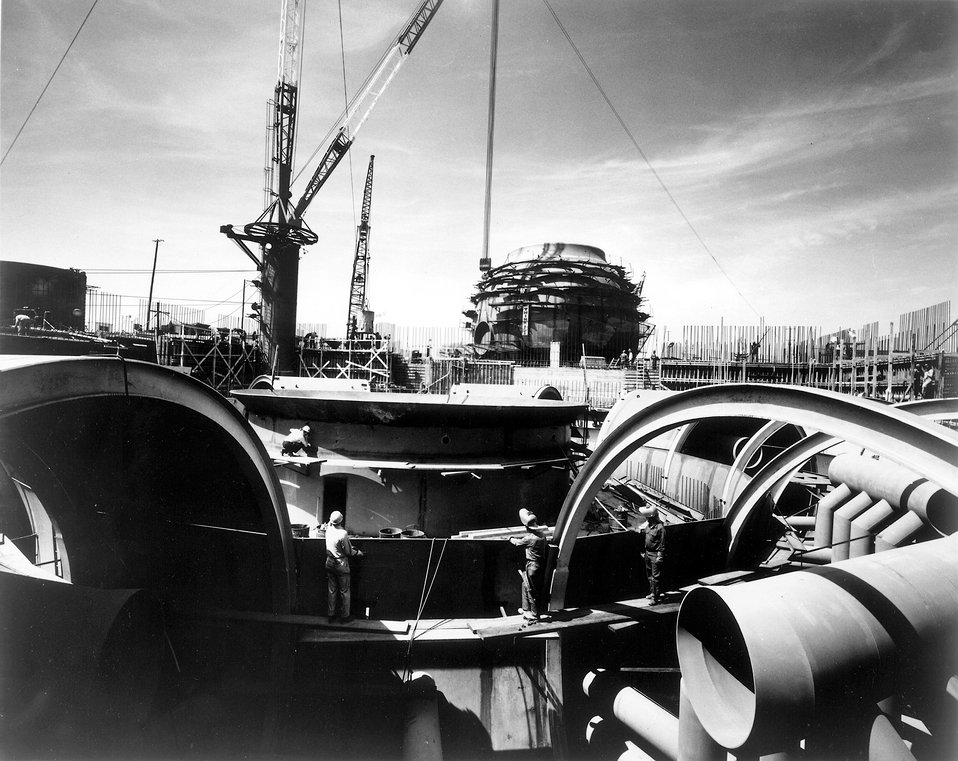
TVA Browns Ferry Nuclear Power Plant under construction at a site on Wheeler Lake, 10 miles southwest of Athens, Alabama. Circa 1970.